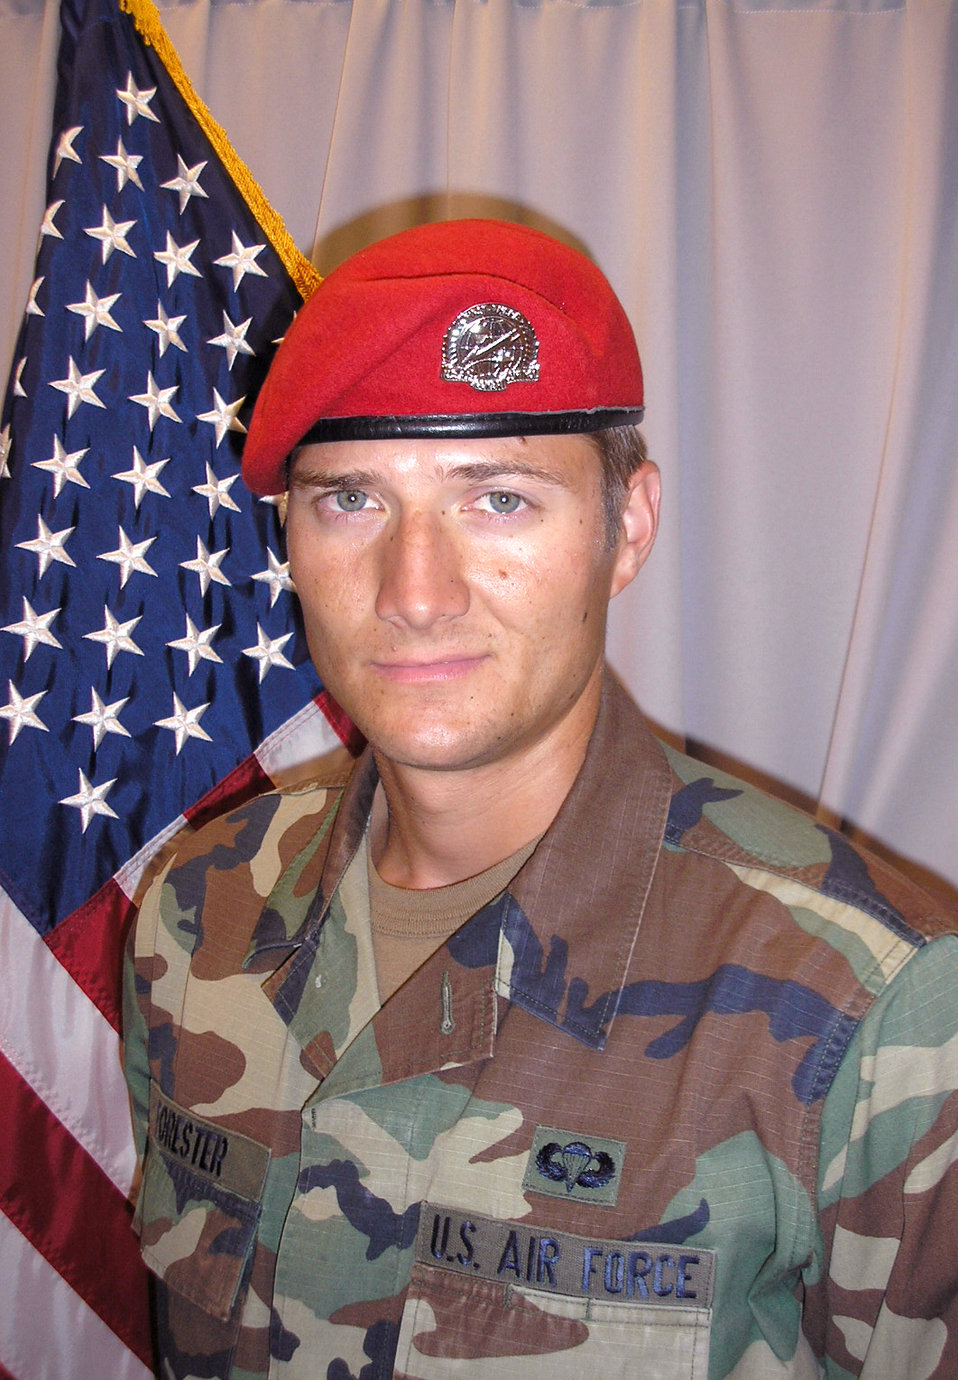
Airman dies

Senior Airman Mark Forester was killed in Uruzgan province, Afghanistan, when his special forces unit came under attack Sept. 29, 2010. Airman Forester was assigned to the 21st Special Tactics Squadron at Pope Air Force Base, N.C.